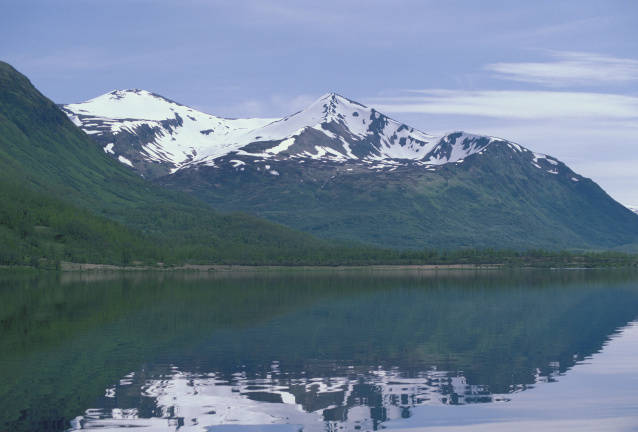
Karluk Lake and mountains

Kodiak National Wildlife Refuge